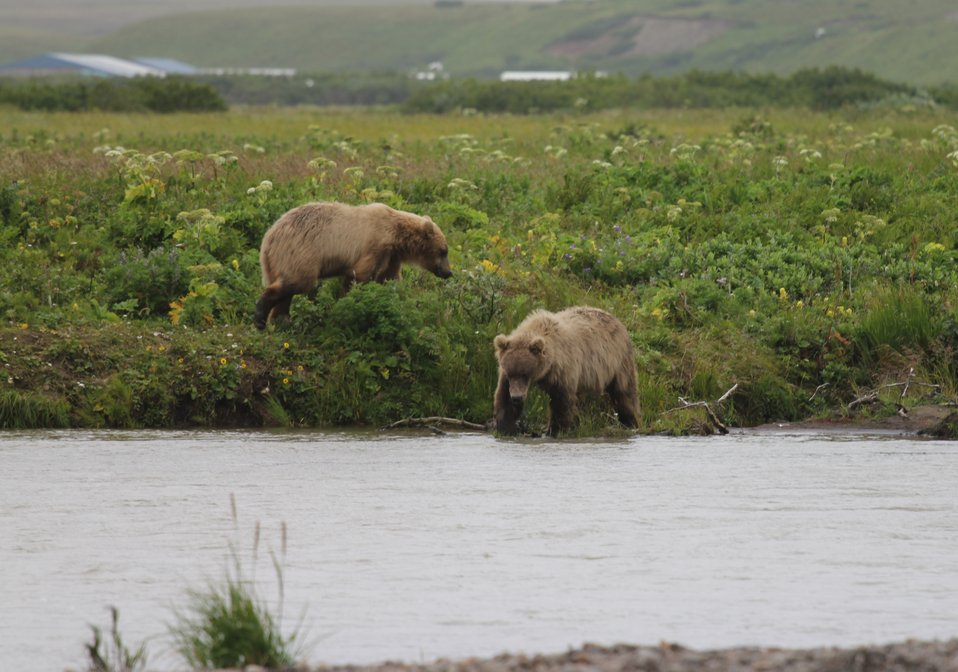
Brown Bear

Russell Creek, Izembek National Wildlife Refuge